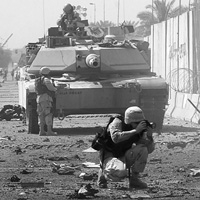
Air Force combat camera team discusses role of media in military

Iraqi police being supported by U.S. forces responds to a vehicle borne explosive device explosion outside gate three of the Green Zone in 2004 in Baghdad, Iraq. Staff Sgt. Jacob Bailey is an aerial combat photojournalist assigned to the 1st Combat Camera Squadron from Charleston Air Force Base, S.C.